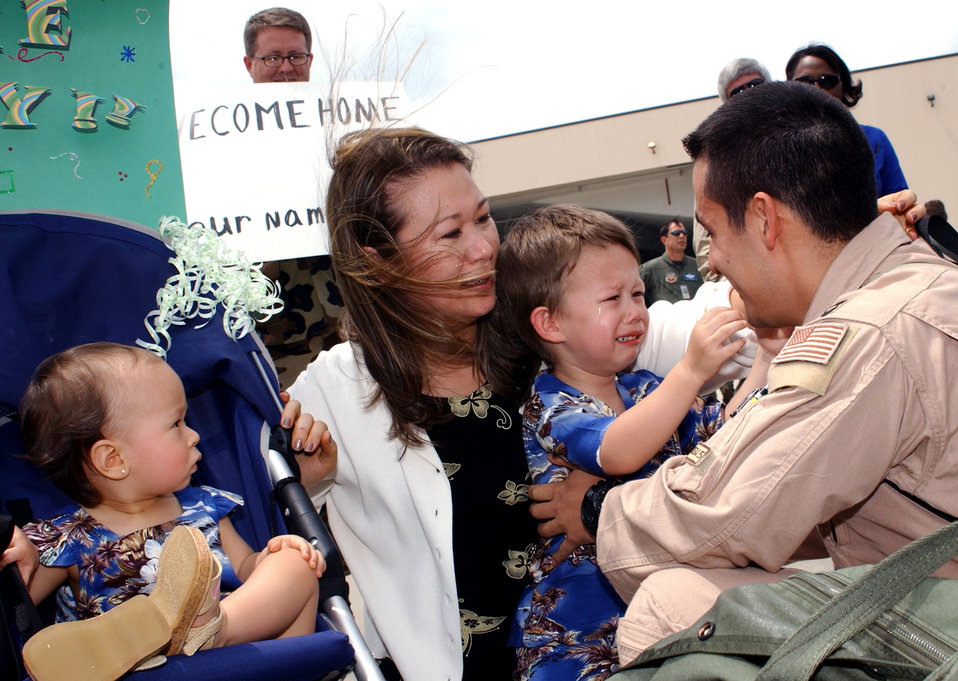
Georgia on my mind

ROBINS AIR FORCE BASE, Ga. -- Shuji Gillis, age 3, is overcome by emotion as he welcomed home his father, Capt. Kouji Gillis, on May 7. The captain is assigned to the Georgia Air National Guard's 116th Air Control Wing here. He was also greeted by his wife, Yuki, and 1-year-old daughter, Momoka. The 116th ACS airmen flew here aboard one of the unit's E-8 Joint Stars Surveillance aircraft after supporting Operation Iraqi Freedom in the Middle East.